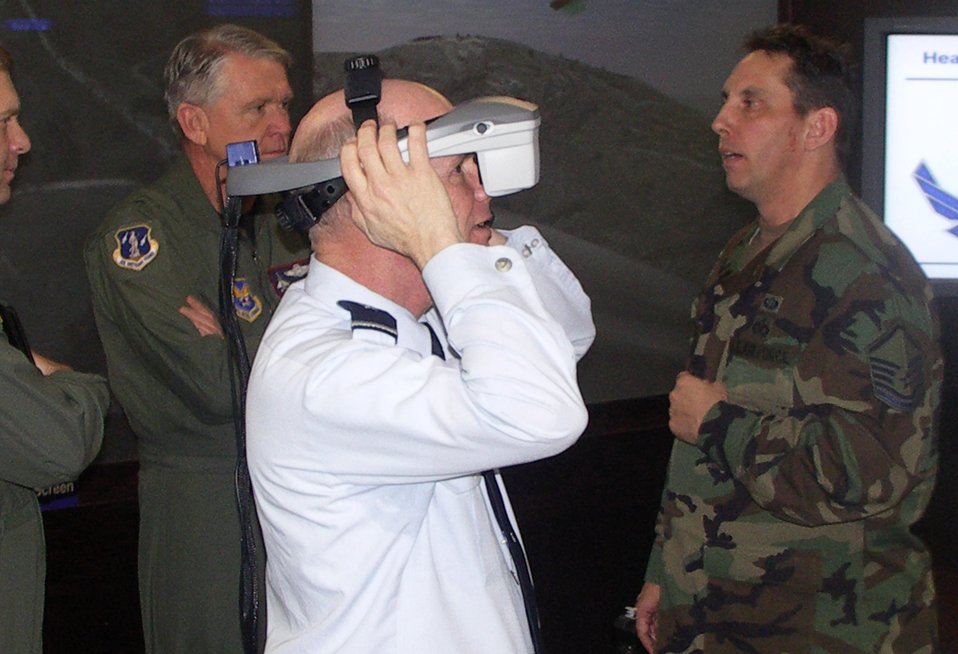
Virtual Flag exercise takes off at Pentagon

Brig. Gen. Charles Morgan III, Air National Guard assistant to the deputy chief of warfighting integration, calls in virtual air support March 7 during a Virtual Flag simulation exercise held at the Pentagon's C4ISR Visualization Center. The exercise connects participants from around the U.S. and helps joint tactical air controllers experience the challenges of calling in air strikes without being in danger.